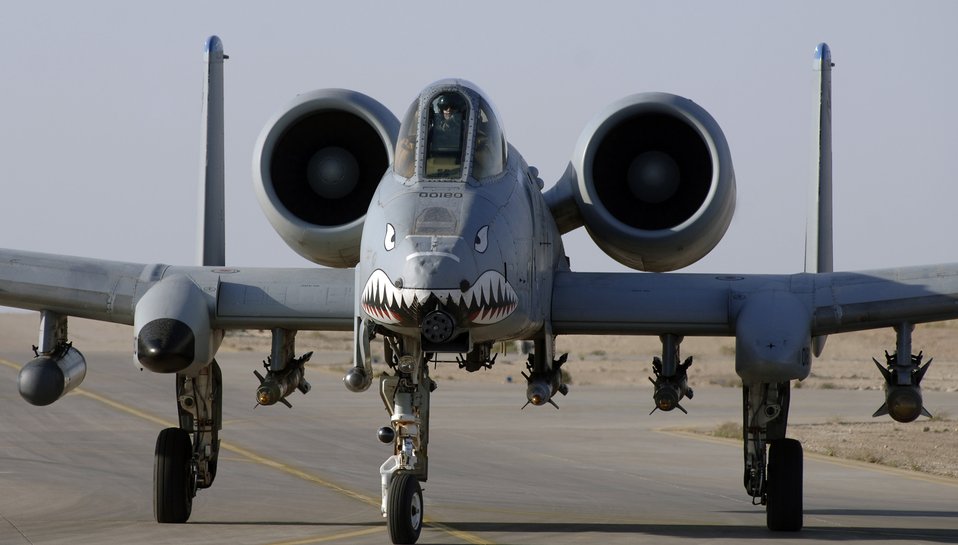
Airpower Summary for July 19, 2007

An A-10 Thunderbolt II prepares to take off from Al Asad Air Base, Iraq, to provide close-air support to ground troops in Iraq. A-10s have excellent maneuverability at low air speeds and altitude and are highly accurate weapons-delivery platforms.